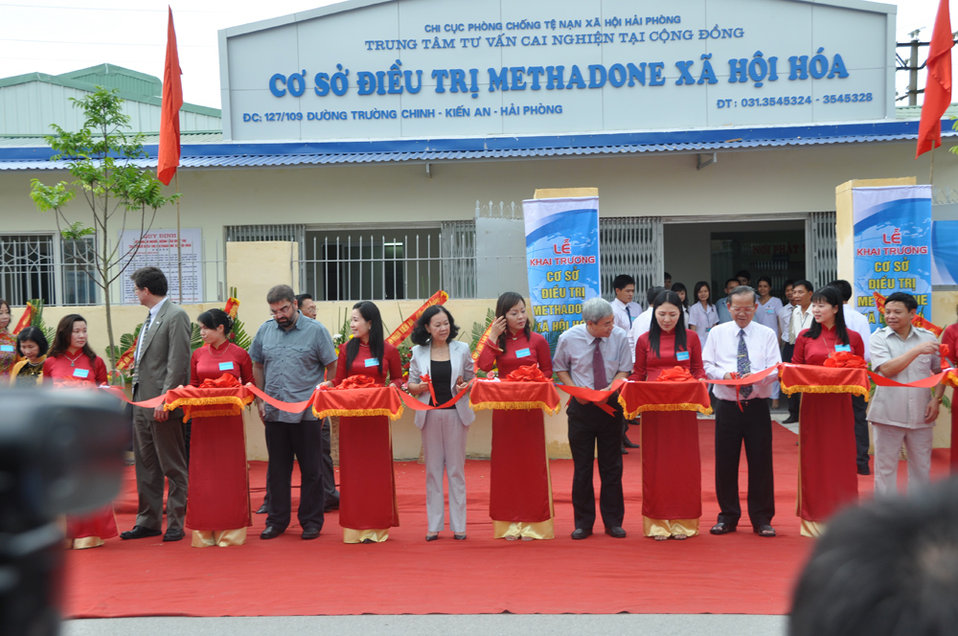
Co-pay Methadone Treatment Center Opens in Hai Phong on June 18, 2011